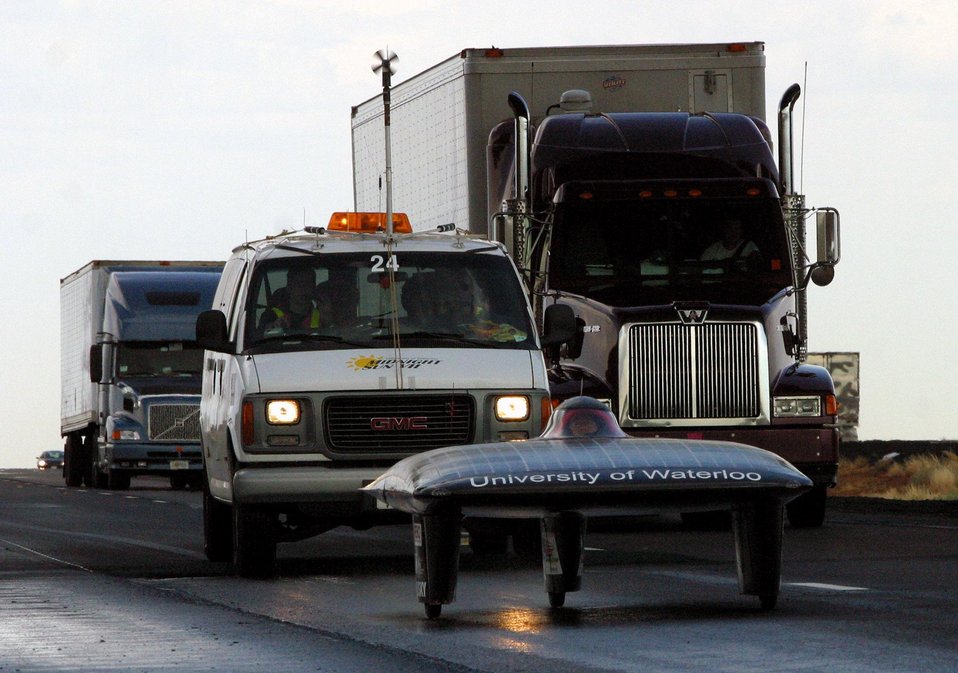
UNIVERSITY OF WATERLOO ENTRY IN TRAFFIC ON INTERSTATE 40 TOWARD FLAGSTAFF, ARIZONA.

THE AMERICAN SOLAR CHALLENGE, THE LONGEST SOLAR CAR RACE IN THE WORLD, IS A DOE SPONSORED EDUCATIONAL EVENT IN WHICH TEAMS COMPETE TO BUILD AND RACE SOLAR-POWERED CARS. TWENTY UNIVERSITIES PARTICIPATED IN THIS YEAR'S EVENT WHICH STARTED IN CHICAGO, ILLINOIS ON JULY 13 AND FOLLOWED ROUTE 66 FOR 2300 MILES TO CLAREMONT, CALIFORNIA, ENDING ON JULY 23, 2003.